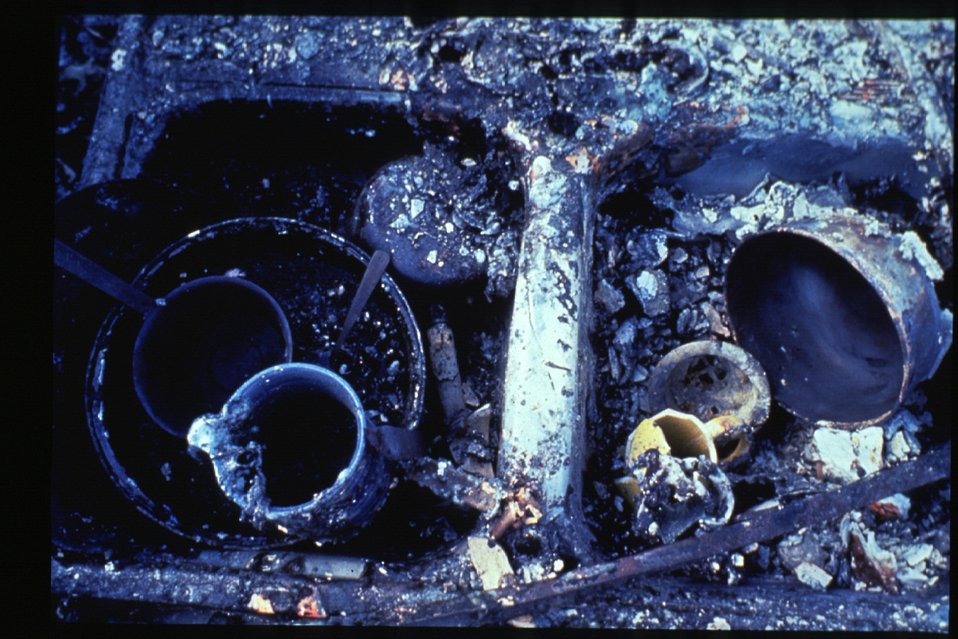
Boise Foothills Fire Danskin Mountains and South Fork of Boise River Burnt home Four River Field Office LSRD Lower Snake River District